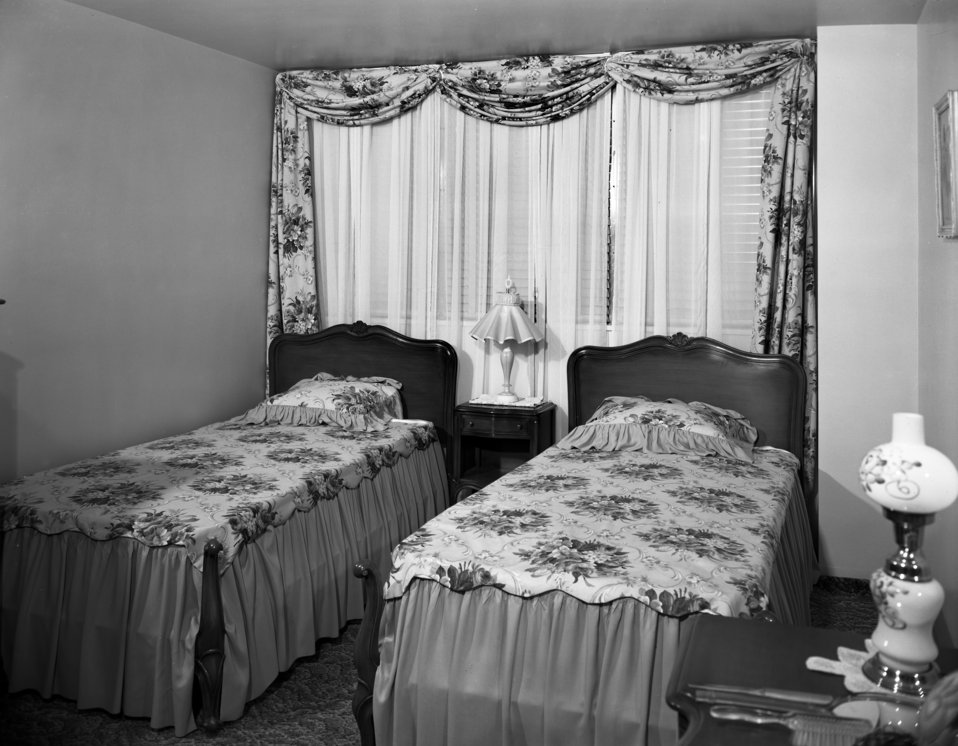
Garden Apartments Interiors Oak Ridge 1949

5719-5a DOE photo Ed Westcott 9-20-1949 Oak Ridge Tennessee